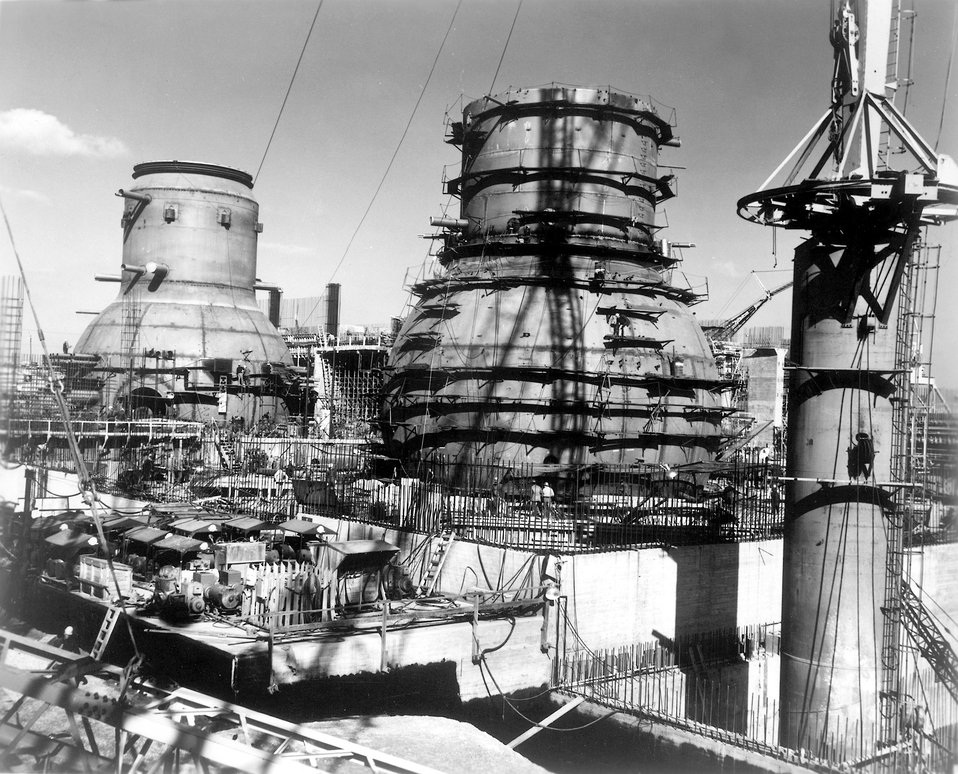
TVA Browns Ferry Nuclear Power Plant under construction at a site on Wheeler Lake, 10 miles southwest of Athens, Alabama. Circa 1970.